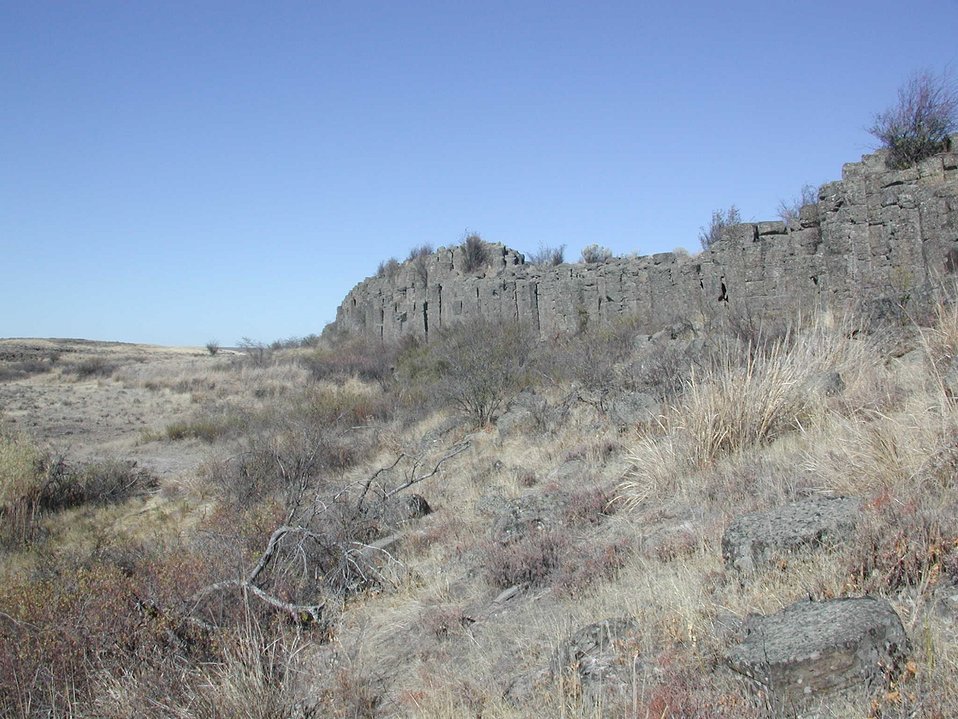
Columar basalt out crop seen at the Sprague Public Lands Day tour.